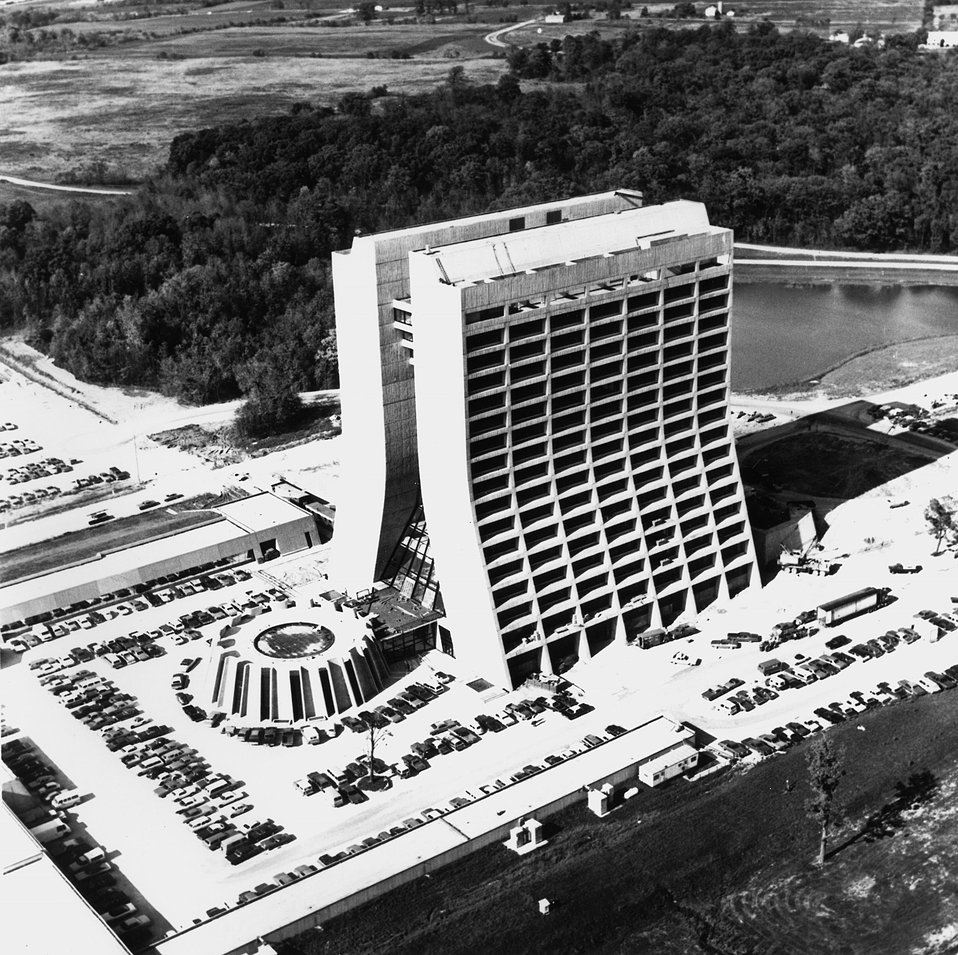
Aerial view of the 16 story Central Lab at AEC LAN.
c.1974